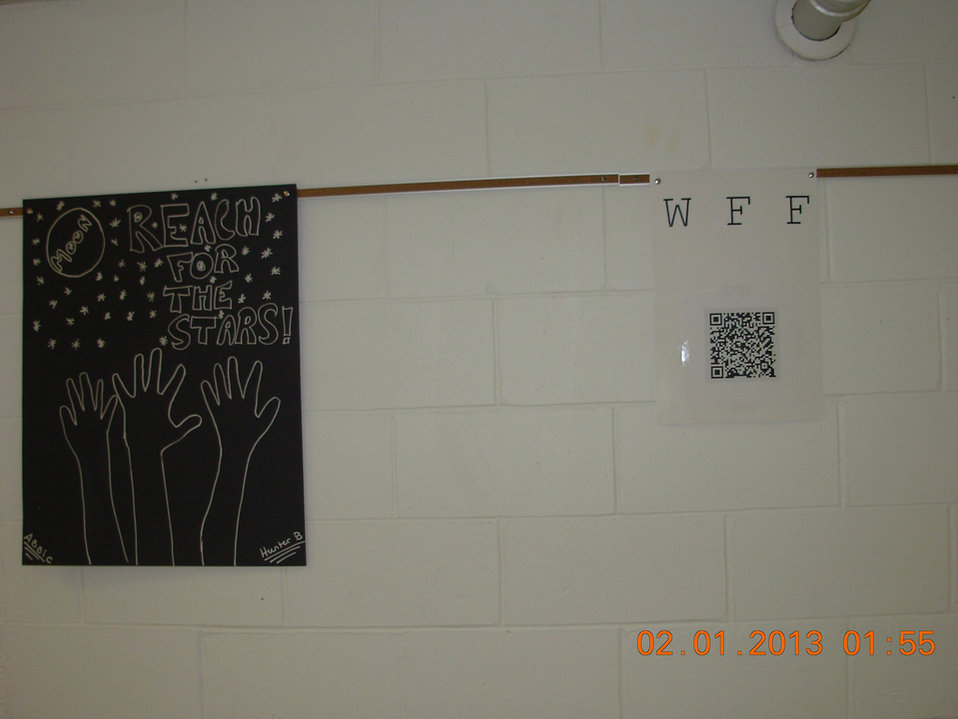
Iowa's SAFE Coalition, NDFW 2013

Van Buren County, IA. SAFE Coalition high school student run groups fighting issues of drug, alcohol, and tobacco abuse during NDFW 2013.